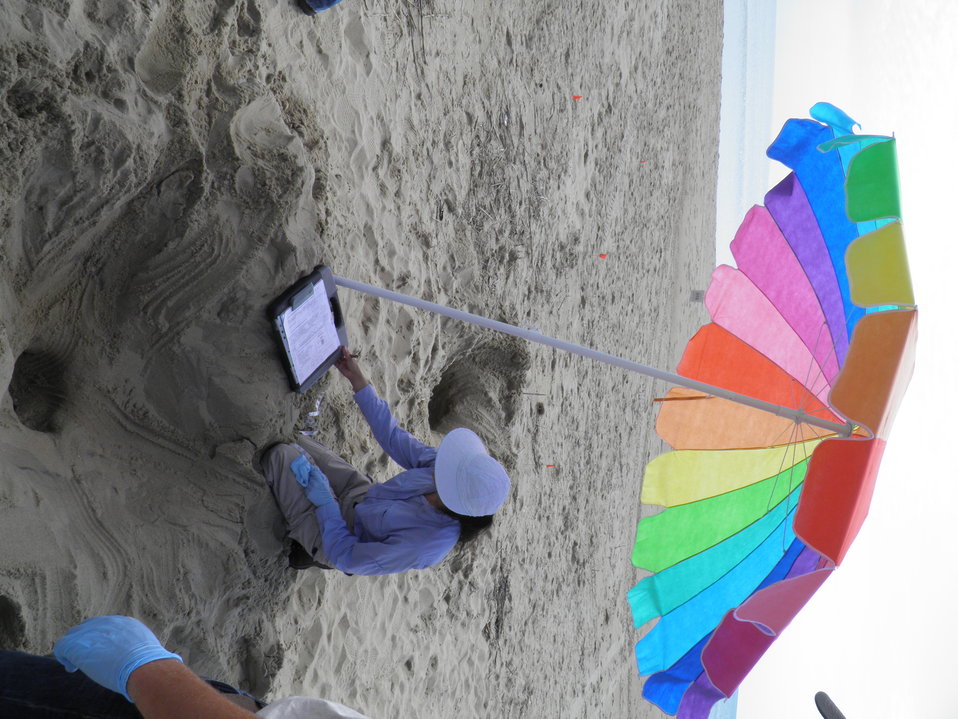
Nest 2 site

Credit: USFWS
Crawl 2, Nest 2